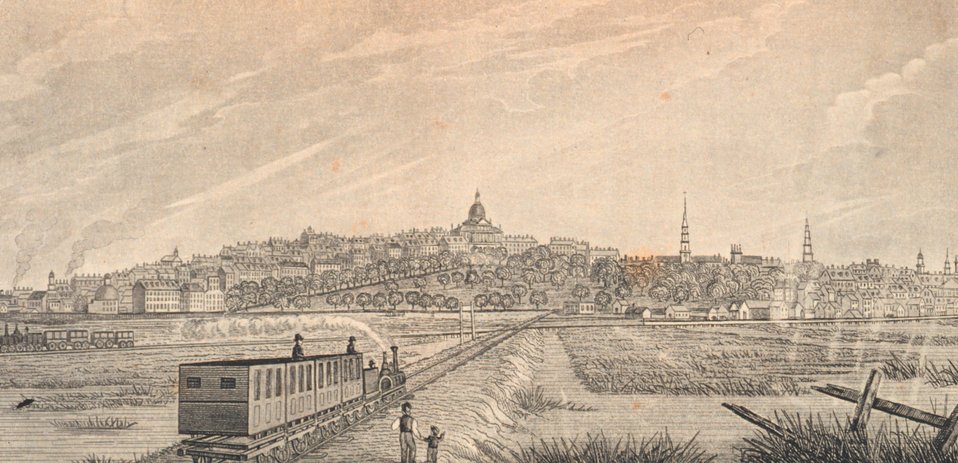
Boston as seen from the southwest near the intersection of the Providence and Worcester rail lines. The State House towering over all and Boston Common are in the center, while the Bunker Hill Monument is seen on the extreme left. In: Historical Collections ... of Every Town in Massachusetts. 1841.